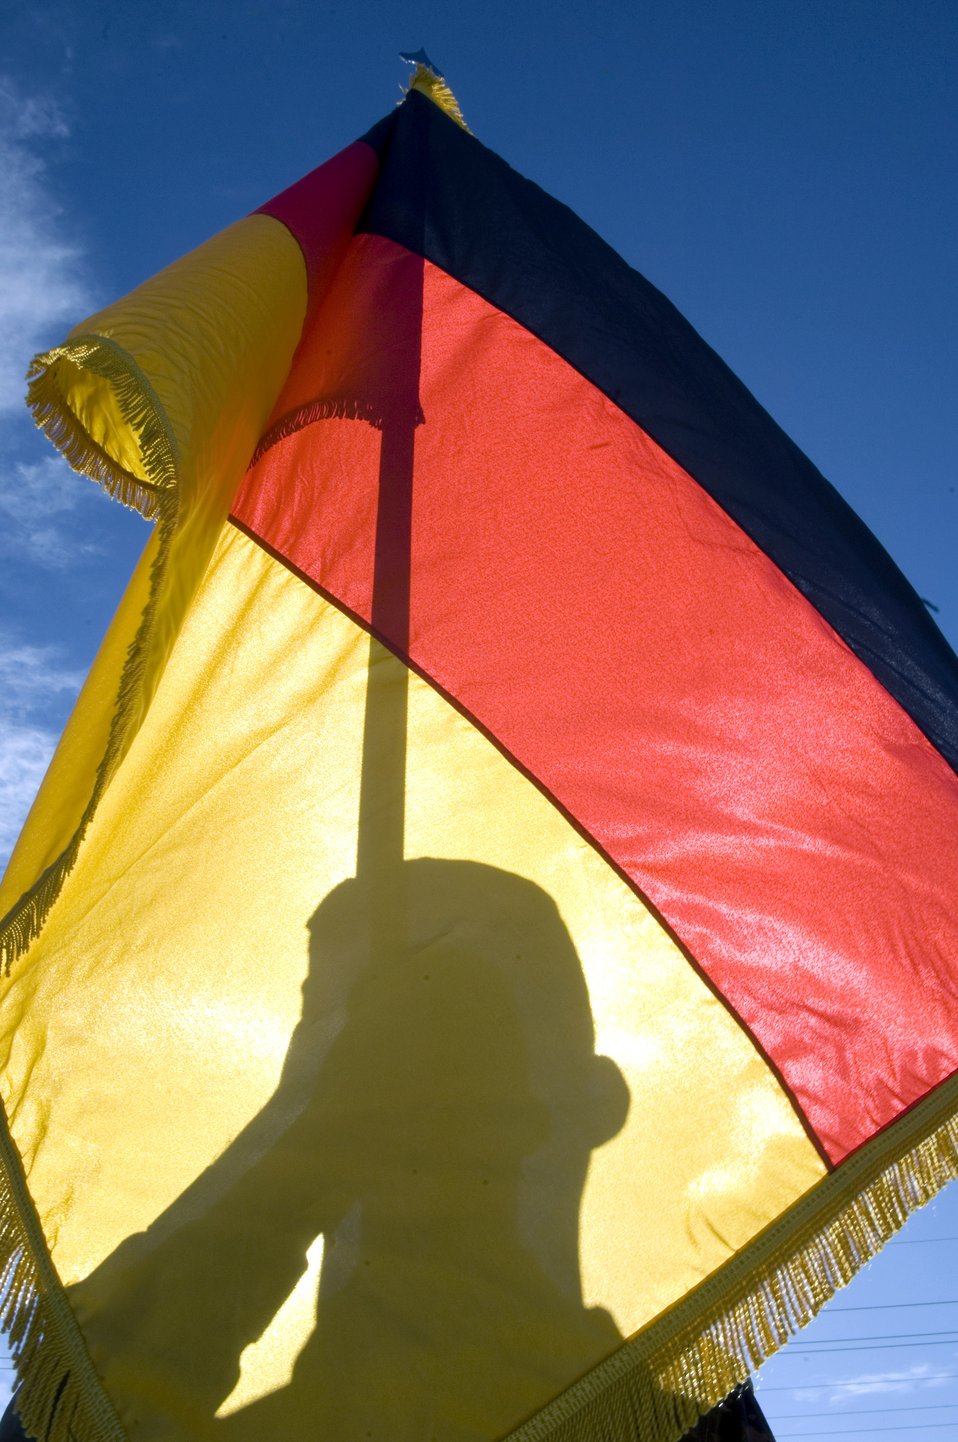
German airman assists with Holloman ceremony

German air force Senior Airman Steffen Hanke holds the German flag while training with U.S. Air Force honor guard members of the 49th Mission Support Squadron Jan. 15 at Holloman Air Force Base, N.M. Airman Hanke was selected to join the base honor guard team and has more than seven years of honor guard experience with the German air force. Holloman AFB is host to the German Air Force Tactical Training Center with more than 300 German air force members stationed there. Germany is one of the strongest allies of the U.S. in NATO and the joint training is important for allied armed forces to train together to ensure effectiveness when called upon to serve together.